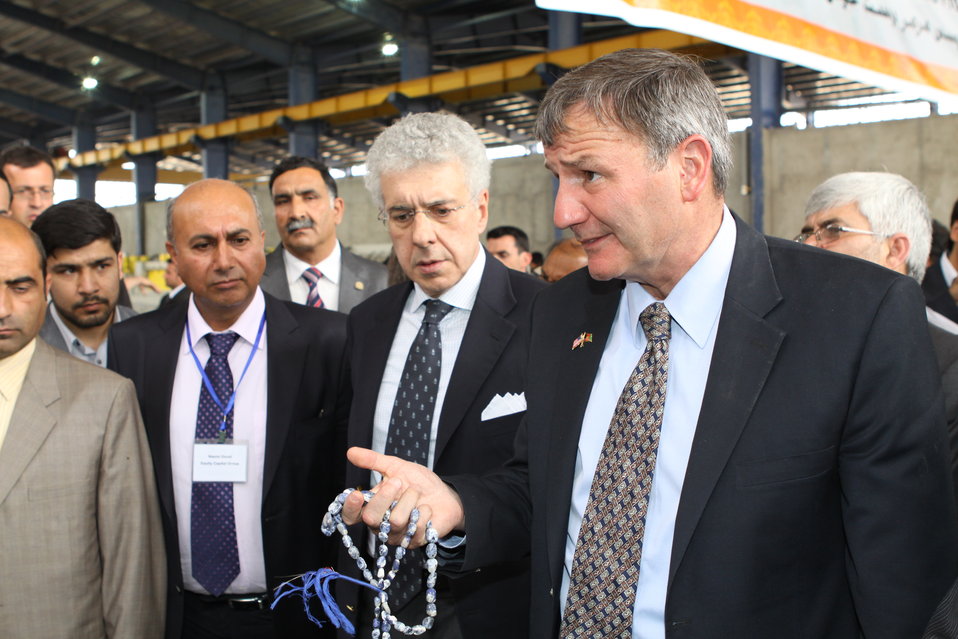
100525 Hirat Marble Conference 492